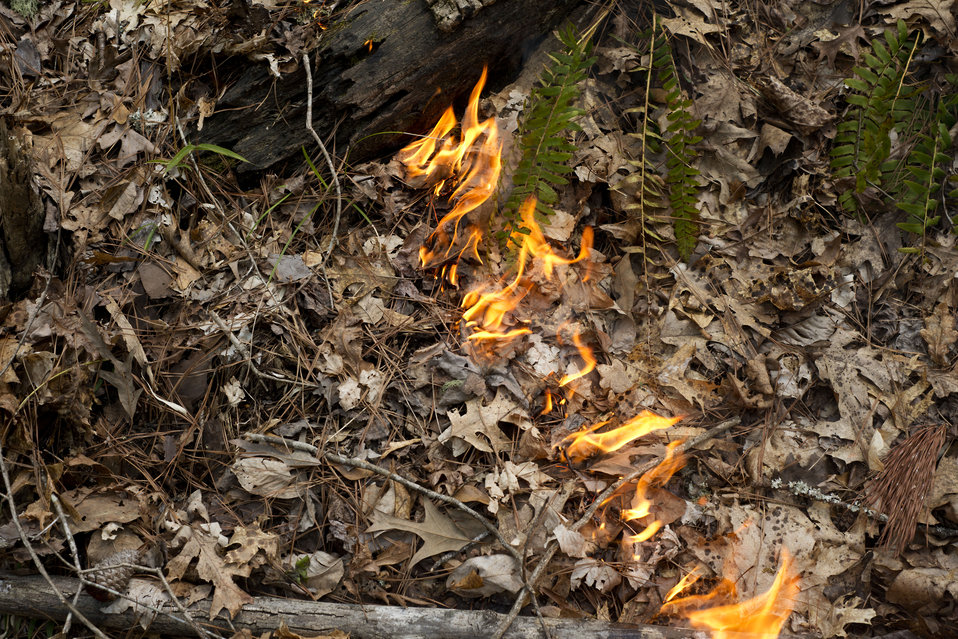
Piedmont C26 Prescribed Fire

On April 9th 2014 USFWS firefighters at Piedmont NWR conducted a 357 acre prescribed fire to help reduce the risk of wildfire and improve habitat. The area burned contains mostly hardwoods with some pine stands intermixed. This unit needs frequent fire to help transition to more open understory with more pine which will improve Red Cockaded Woodpecker habitat on the refuge.